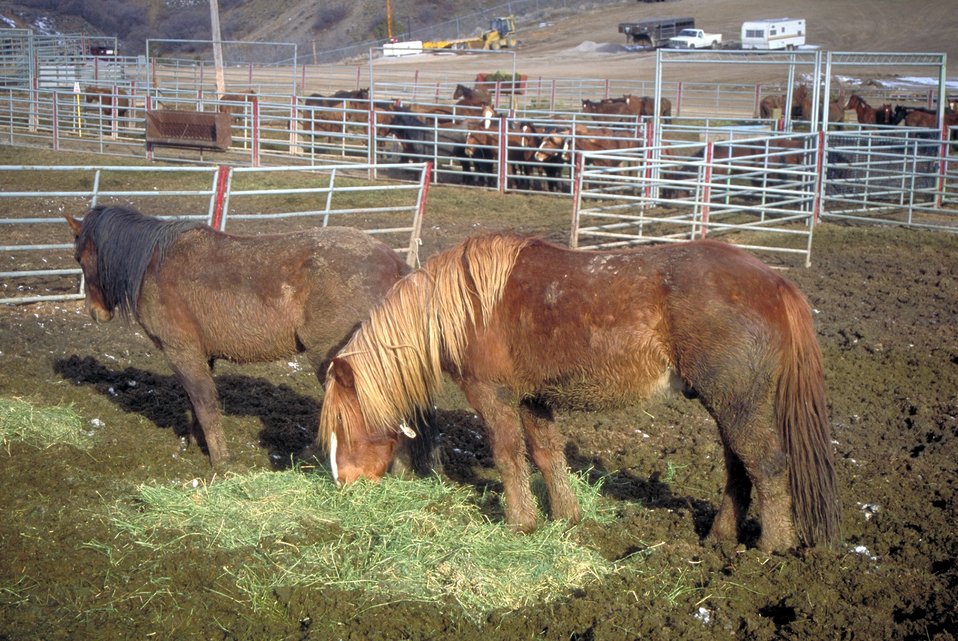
Salt Lake Regional Wild Horse and Burro Center Butterfield Canyon.